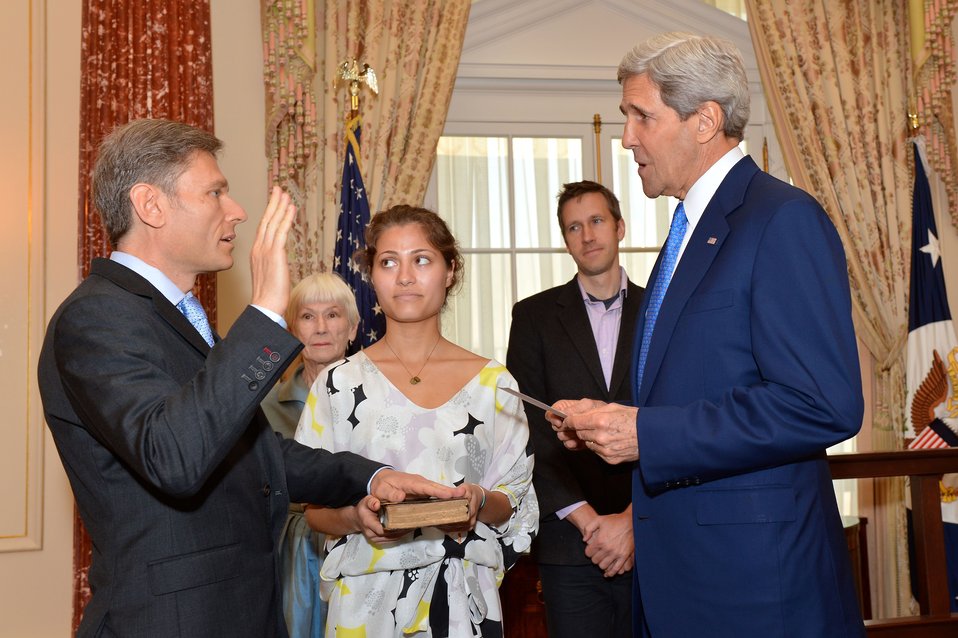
Secretary Kerry Swears in Assistant Secretary Malinowski

U.S. Secretary of State John Kerry swears in Assistant Secretary for Democracy, Human Rights, and Labor Tom Malinowski at the U.S. Department of State in Washington, D.C., on May 13, 2014.